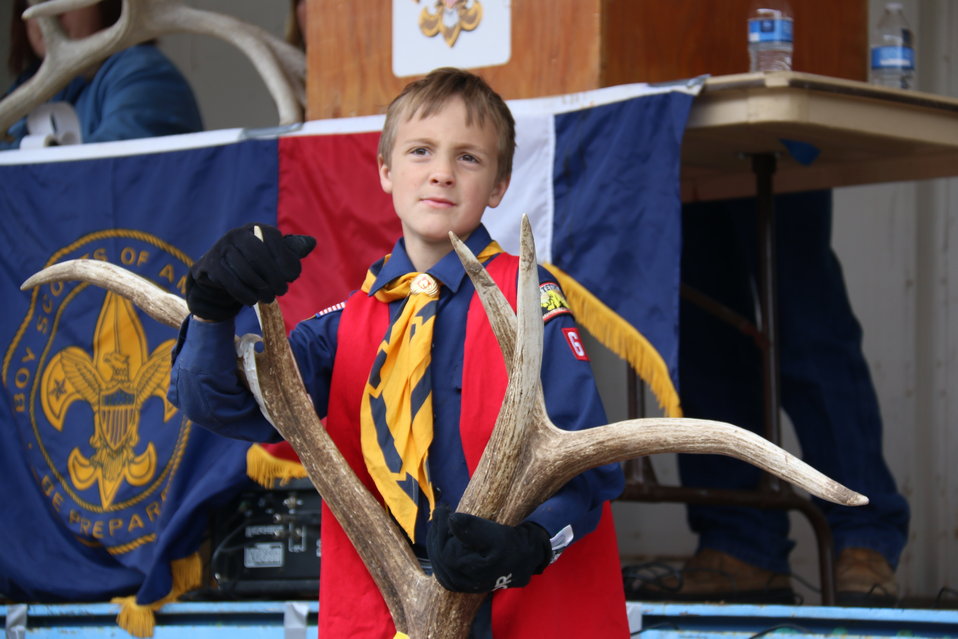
Waiting Patiently

A Scout waits patiently during a bidding war, holding a set of antlers that eventually sold for $27 per pound (2013).